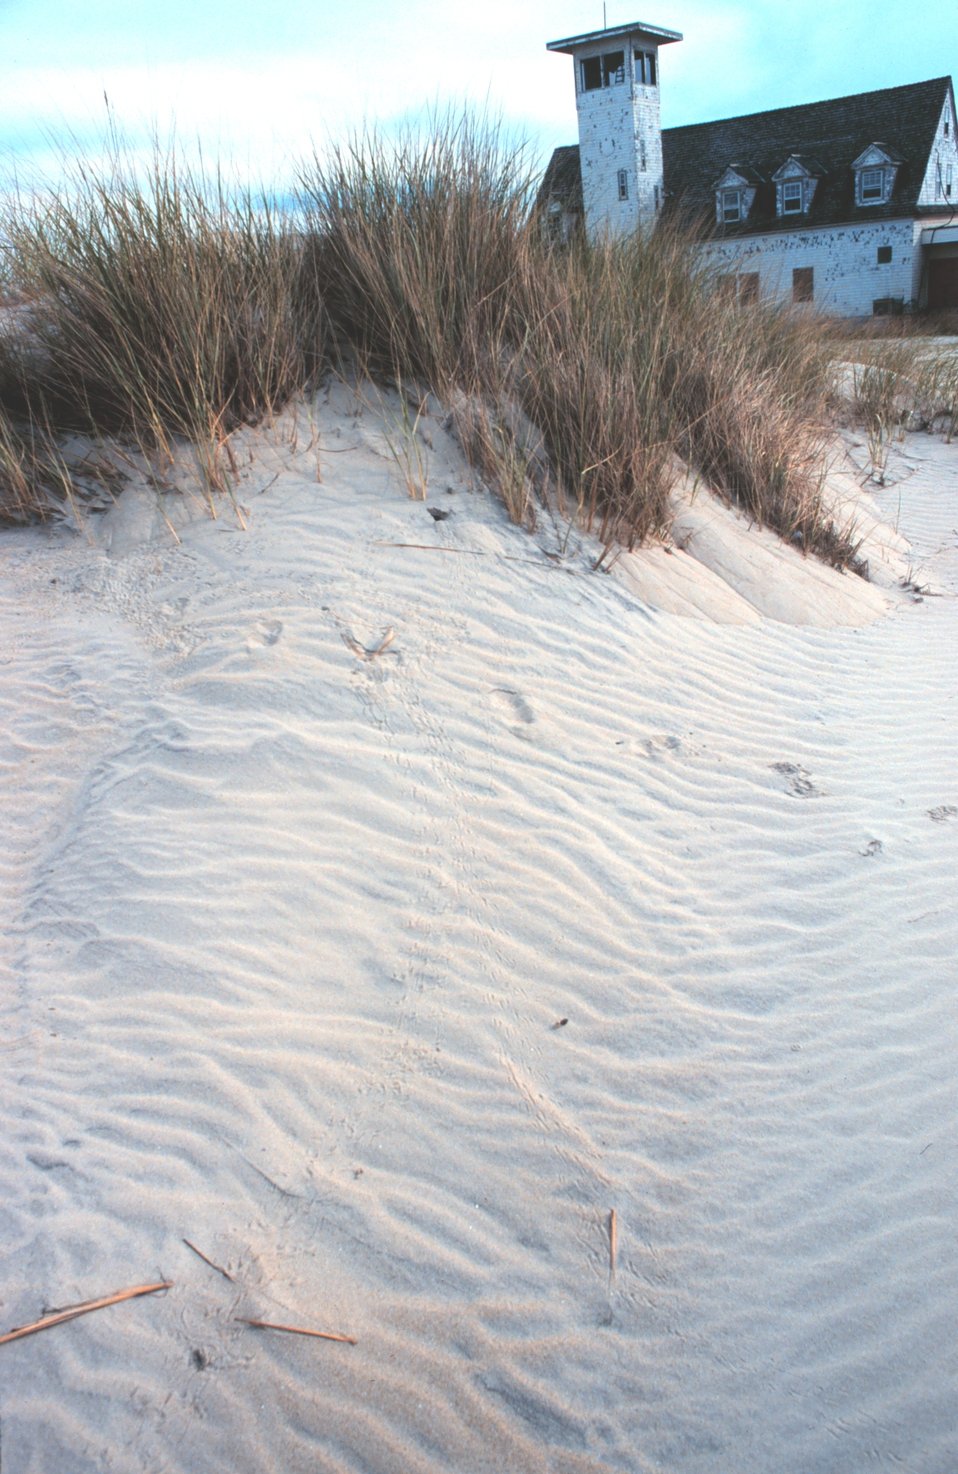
Wind-swept dunes near the abandoned Coast Guard Station